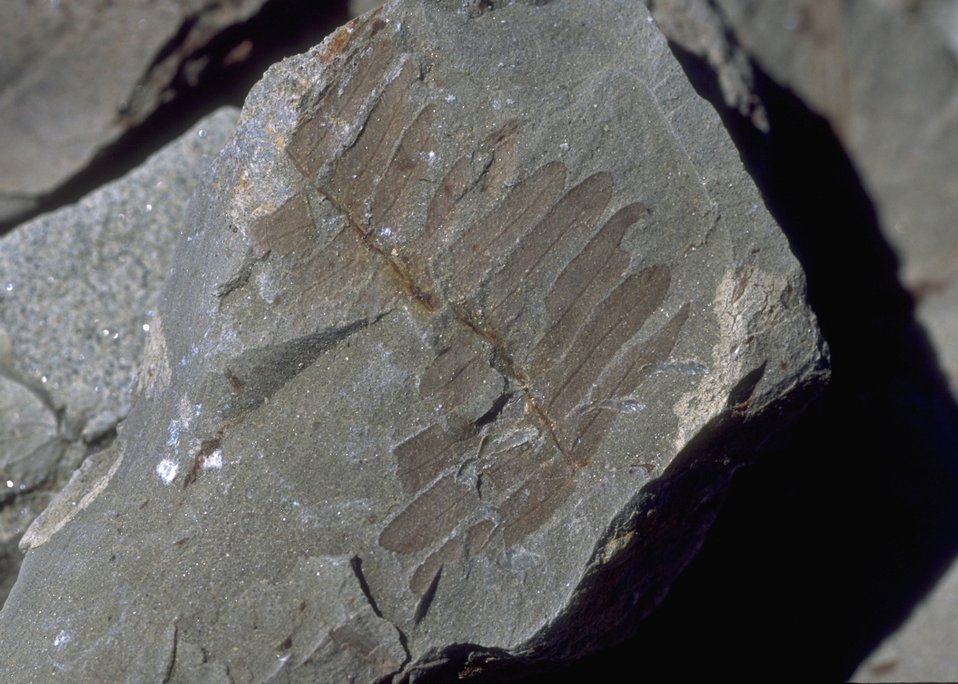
Close up of fossil vegetation, Cedar Ridge Paleo area, Worland Field Office.